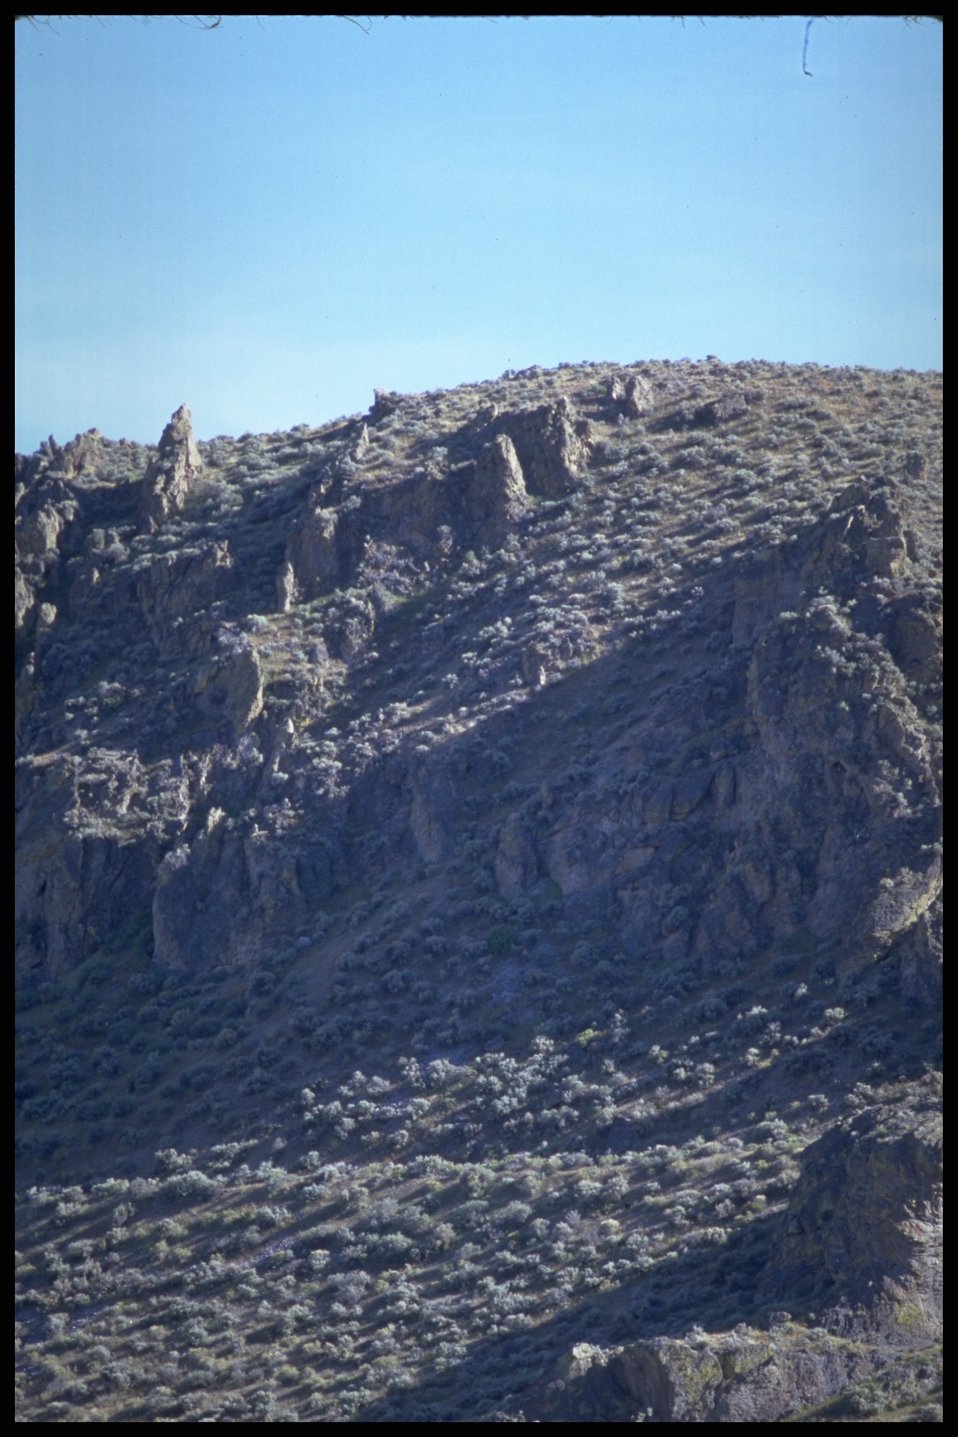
Golden Eagle area, Lakeview District.